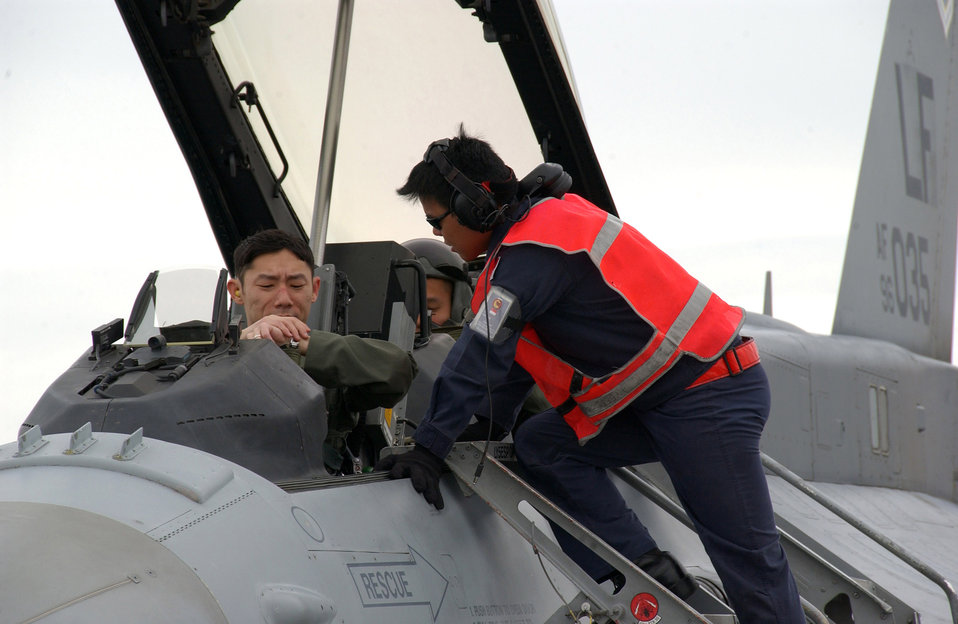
Joint forces combine for Red Flag-Alaska exercise

A Republic of Singapore Air Force crew chief helps two Singapore pilots complete post-flight checks after landing at Eielson Air Force Base, Alaska, May 30 for Red Flag-Alaska 07-2.